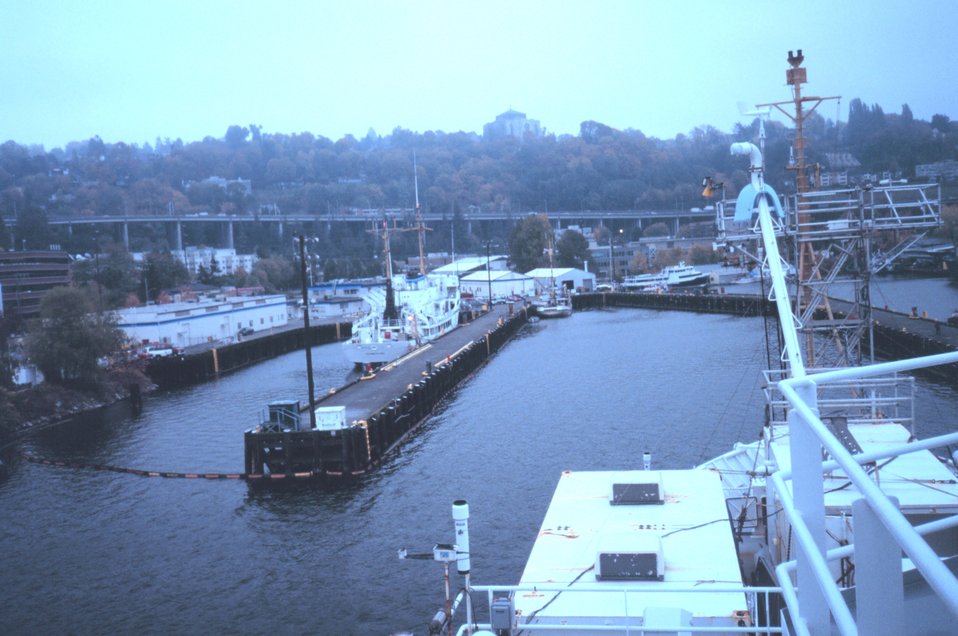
The RONALD H. BROWN approaching the pier at NOAA's Pacific Marine Center at the end of its around the world cruise from October 1998 to October 1999.